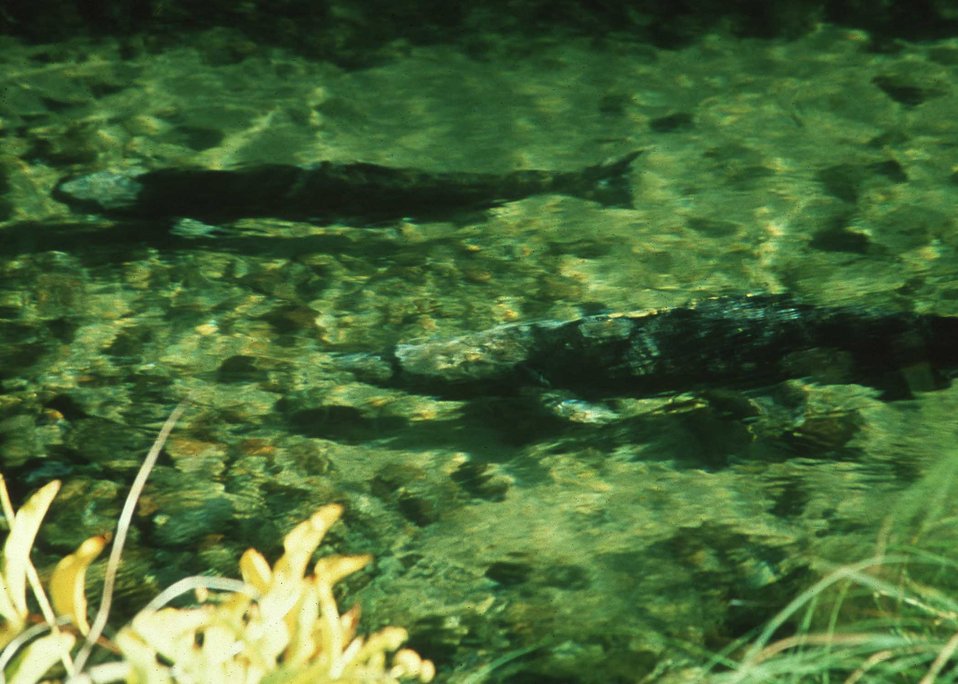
Salmon rest in a quiet pool before resuming their migration.